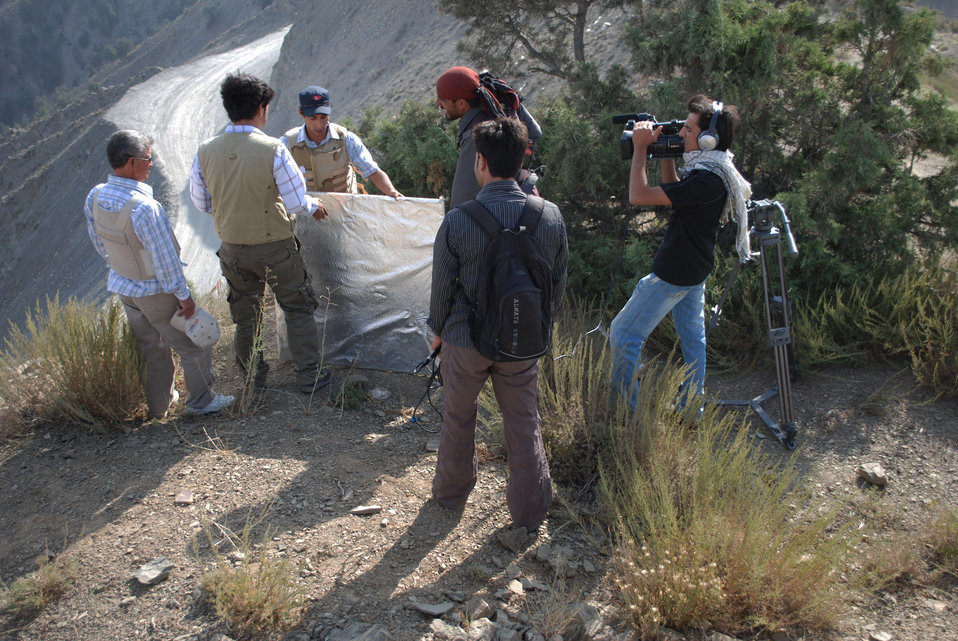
'On the Road' in Paktya Province